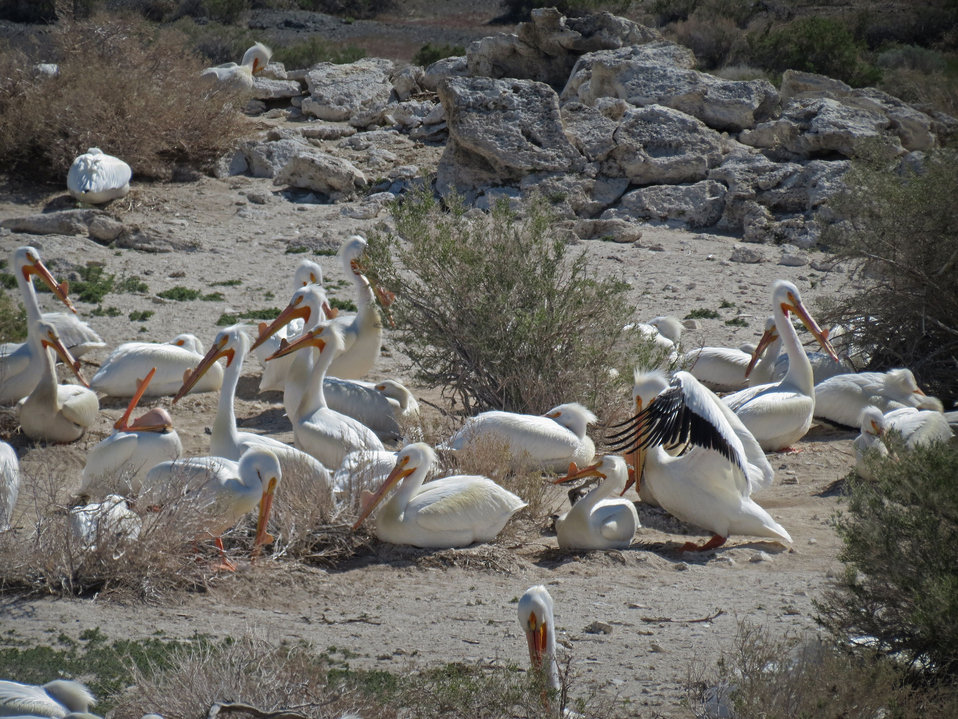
Anaho Island NWR adult American white pelican on nest